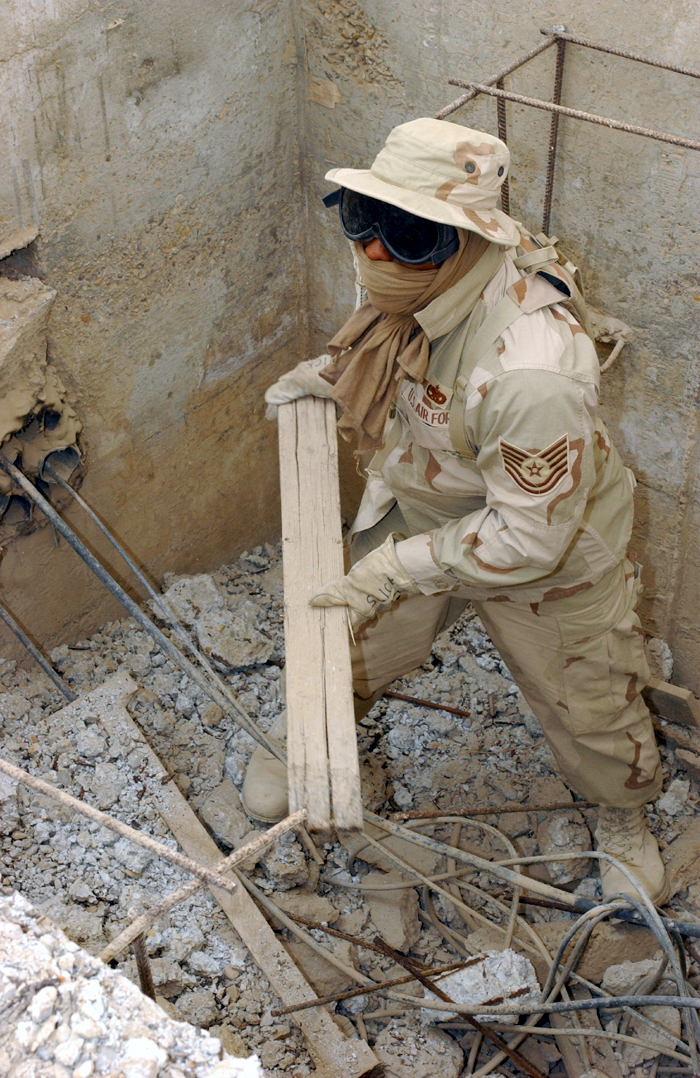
Cleaning up

OPERATION IRAQI FREEDOM -- Tech. Sgt. Denny Tankslery clears debris from a collapsed manhole to make way for fiber-optic cable at Tallil Air Base in southern Iraq. He is assigned to the 5th Combat Communications Group from Robins Air Force Base, Ga.